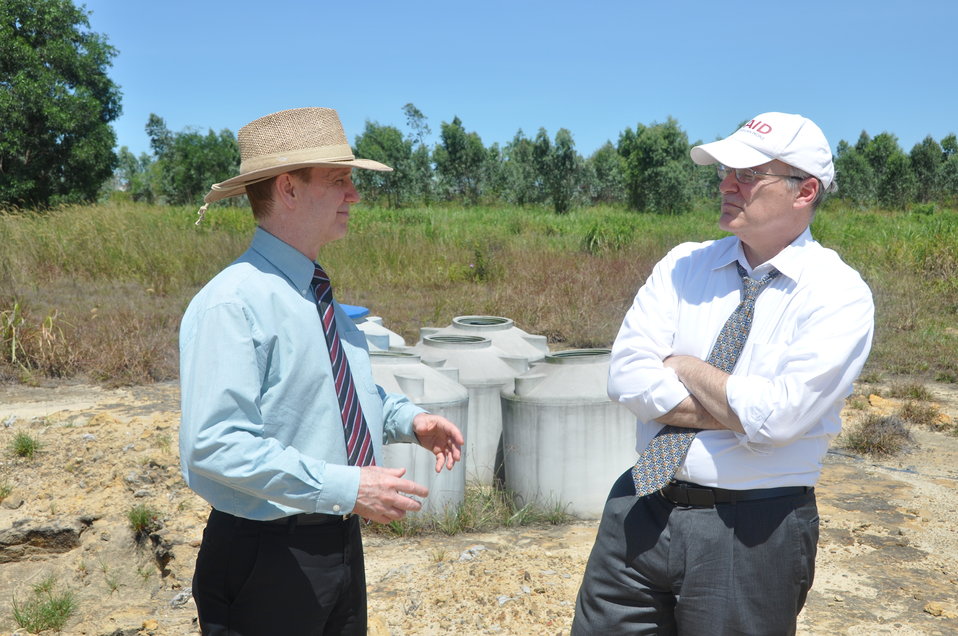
USAID Deputy Administrator Donald Steinberg, right, and USAID Vietnam Mission Director Francis Donovan visit Danang Airport

USAID Deputy Administrator Donald Steinberg Visits Vietnam